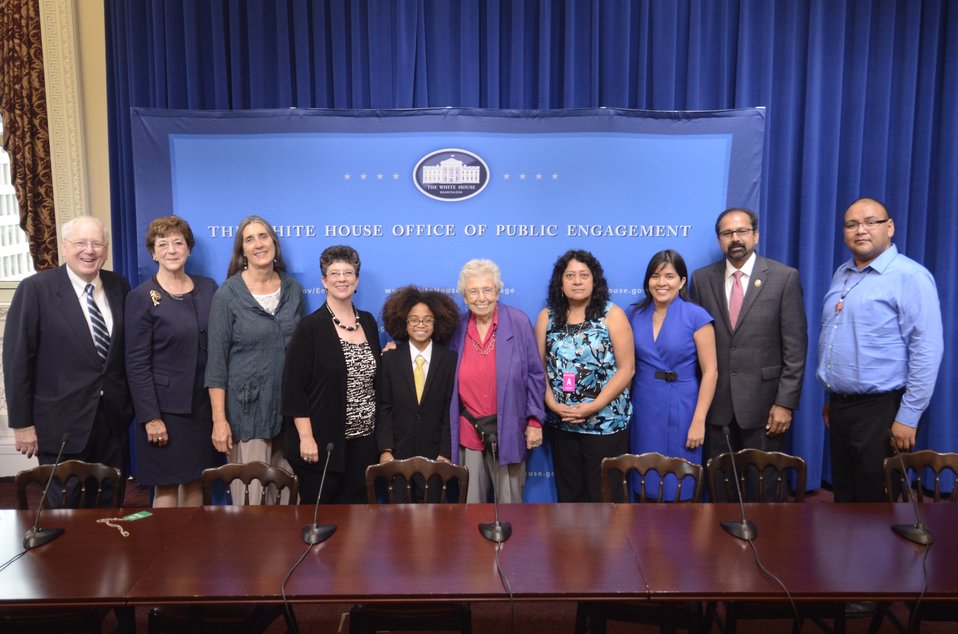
Ten individuals were honored for their efforts to reduce hunger and increase food security in the U.S. and internationally at the White House Champions of Change Strengthening Food Security at Home and Abroad Event held at the White House on Thursday, September 6, 2012. (L to R) World Food Prize Foundation President Kenneth Quinn; Auburn University (Alabama) College of Human Sciences Dean Dr. June Henton; Mandela MarketPlace Executive Director Dana Harvey; East Lake United Methodist Church Pastor Reverend Sally Allocca; Joshua’s Heart Foundation President Joshua Williams; Community Food Advocates, Inc. Co-Director Kathy Goldman; Parents United for Healthy Schools Leader Jovita Flores; Catholic Medical Mission Board Project Director Dr. Claudia Llanten; Fort Valley State University (Georgia) College of Agriculture, Family Sciences and Technology Dean and Director Dr. Govind Kannan;Tohono O’odham Community Action Co-Founder and President Terrol Johnson; and (not pictured) Thriive Founder Erik Schultz.